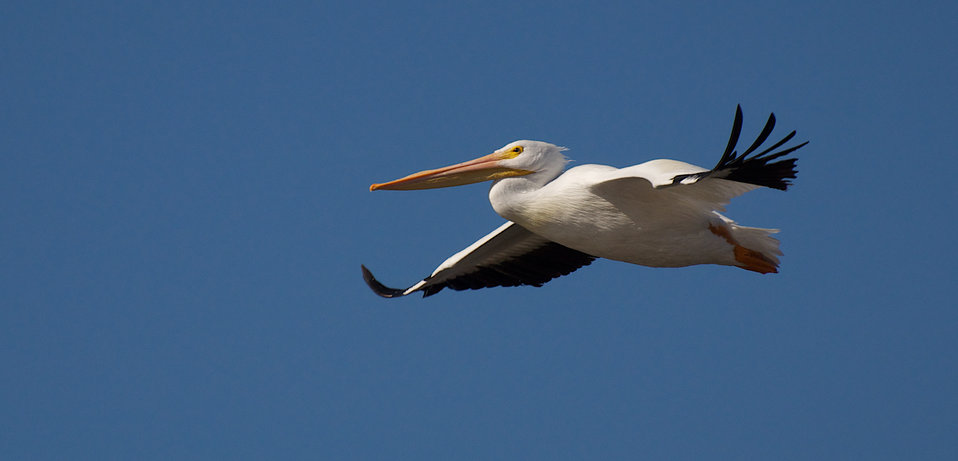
Adult American white pelican in flight

American white pelican in flight at Sonny Bono NWR.